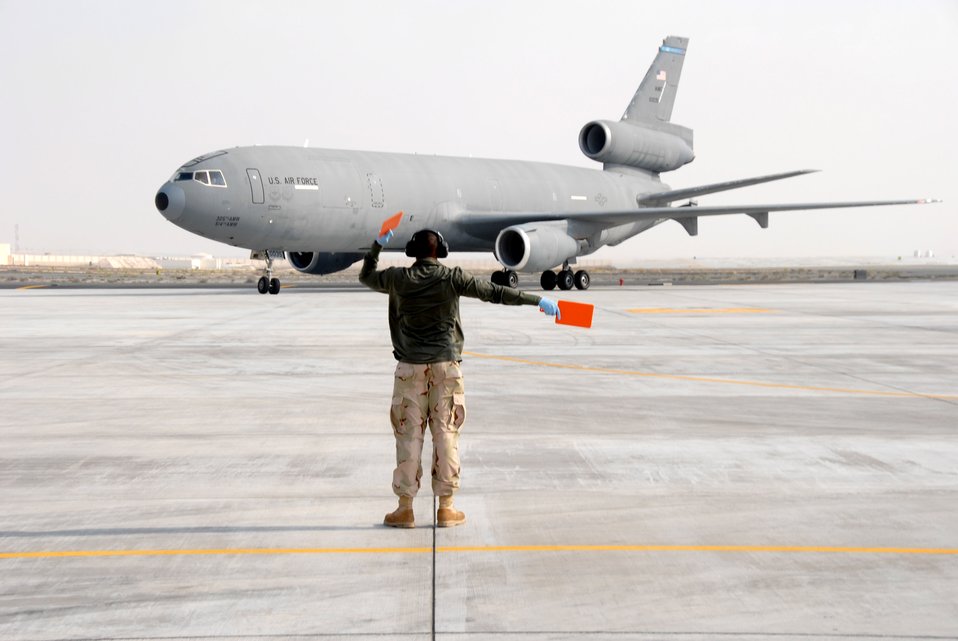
Keeping the fuel flowing

A KC-10 Extender from the 380th Air Expeditionary Wing pulls into a parking spot Dec. 19 after returning from a mission over Iraq. The air refueler is part of the largest air-refueling unit in Southwest Asia consisting of KC-10s and KC-135 Stratotankers. The KC-10 can carry about 56,000 gallons of gas, enough to fill a sport-utility vehicle 1,400 times.